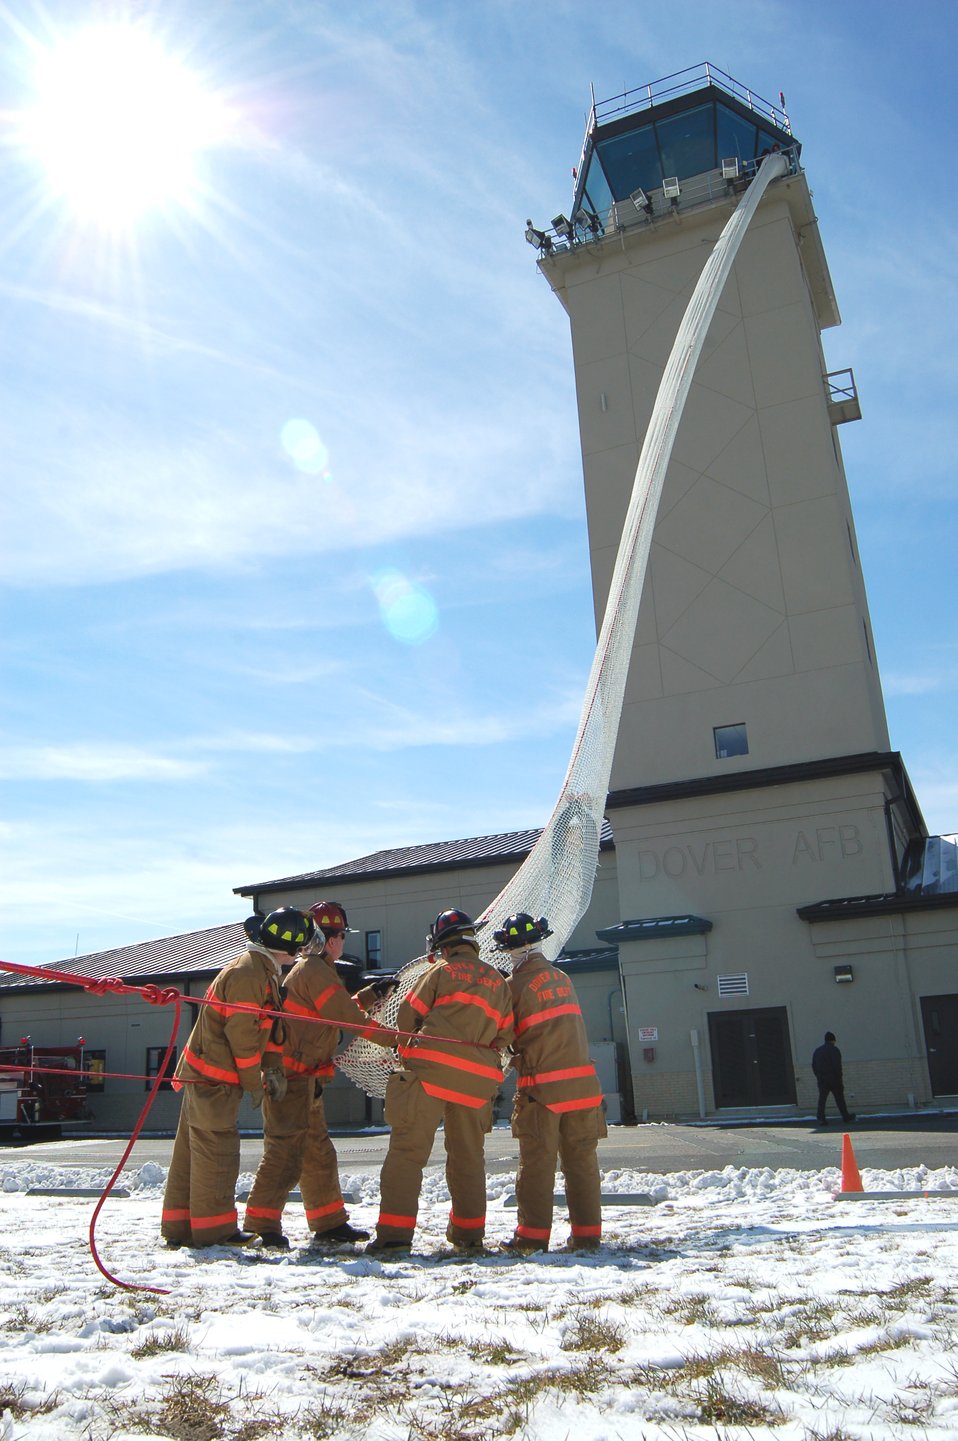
Straight 'chute' to safety

An air traffic controller at Dover Air Force Base, Del., slides down a Baker Life Chute from the control tower March 8 during a fire drill as Airman Kyle Herron (from left), Airman 1st Class Darliska Blessing, Jeffrey McCombs and Tom Peers wait to help her safely exit from the chute. The life chute was installed on the tower's catwalk and is designed to allow controllers a safe descent to the ground level in the event of an emergency. The firefighters are from the 436th Civil Engineer Squadron.